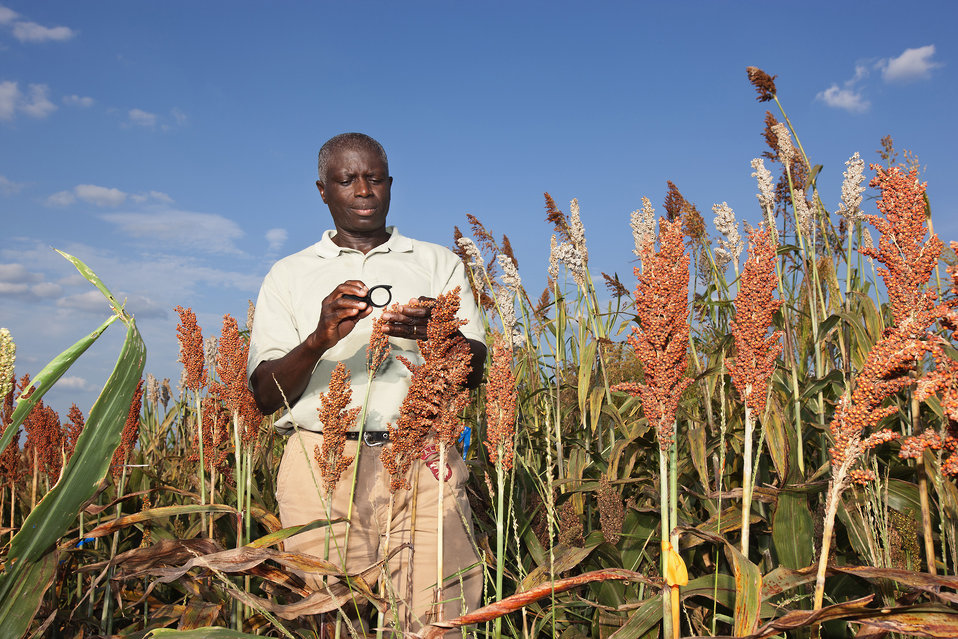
U.S. Department of Agriculture (USDA) Agriculture Research Service (ARS) plant pathologist Louis K. Prom examines sorghum seeds infected by Colletotrichum sublineolum on Dec. 6, 2002. This is the cause of sorghum anthracnose.